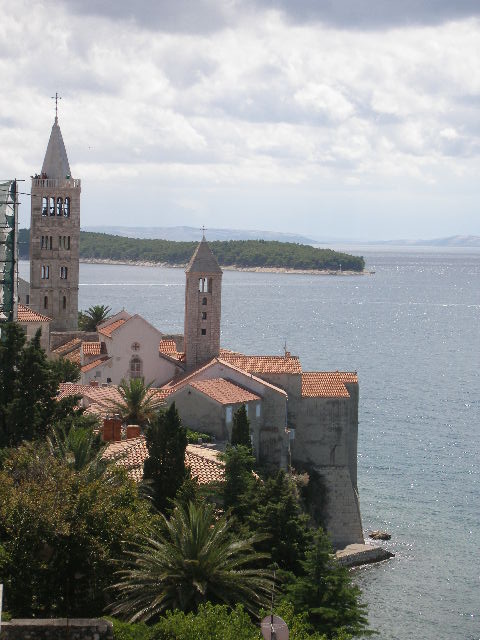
Island of Rab, the cliff at the end of the town of Rab.